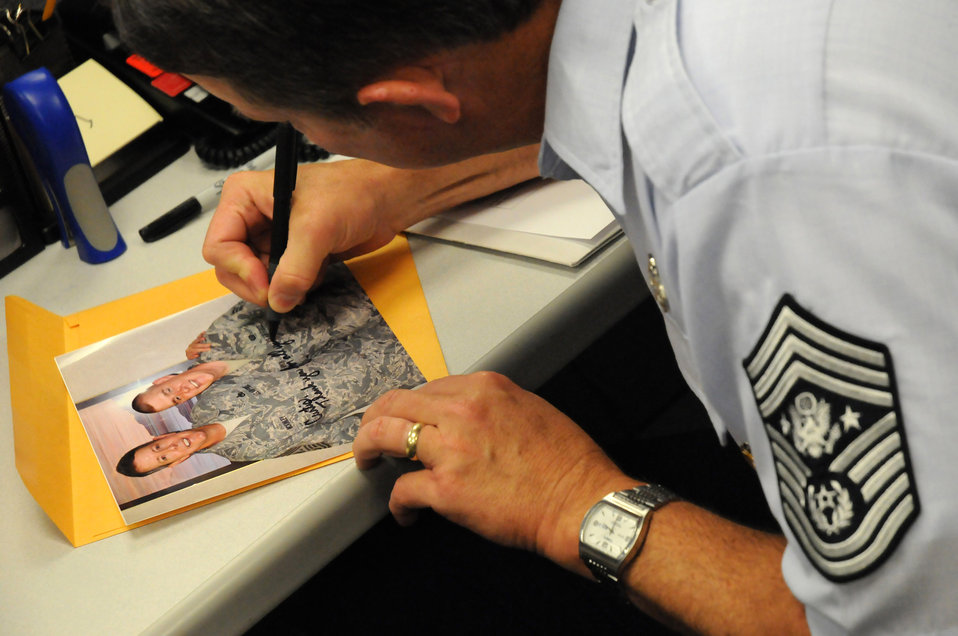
Straight from the chief

Chief Master Sgt. of the Air Force Rodney J. McKinley takes time to sign a photo for Senior Airman Curtis Morrison during his visit to the National Air and Space Intelligence Center Sept. 8 at Wright-Patterson Air Force Base, Ohio. During his visit, the chief visited with enlisted, officer and civilian employees and answered questions from Airmen. He is the 15th chief master sergeant of the Air Force.